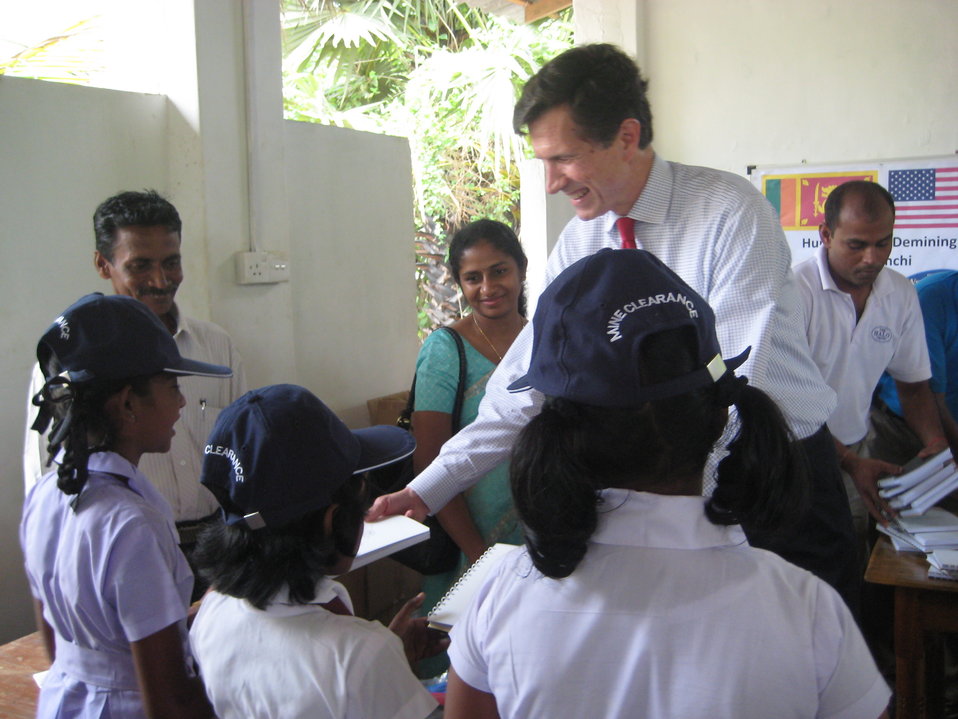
Assistant Secretary Blake Meets With Students in Sri Lanka

Assistant Secretary of State for South and Central Asian Affairs Robert O. Blake, former U.S. Ambassador to Sri Lanka, meets with students in Kilinochchi, Sri Lanka, on May 3, 2011.